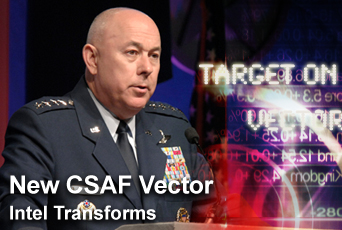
'Chief's Vector' discusses Air Force intelligence transformation

The latest Chief of Staff Vector, which discusses the transformation of intelligence activities, is now online. Gen. T. Michael Mosely outlines how Intelligence, Surveillance and Reconnaissance capabilities will be managed.